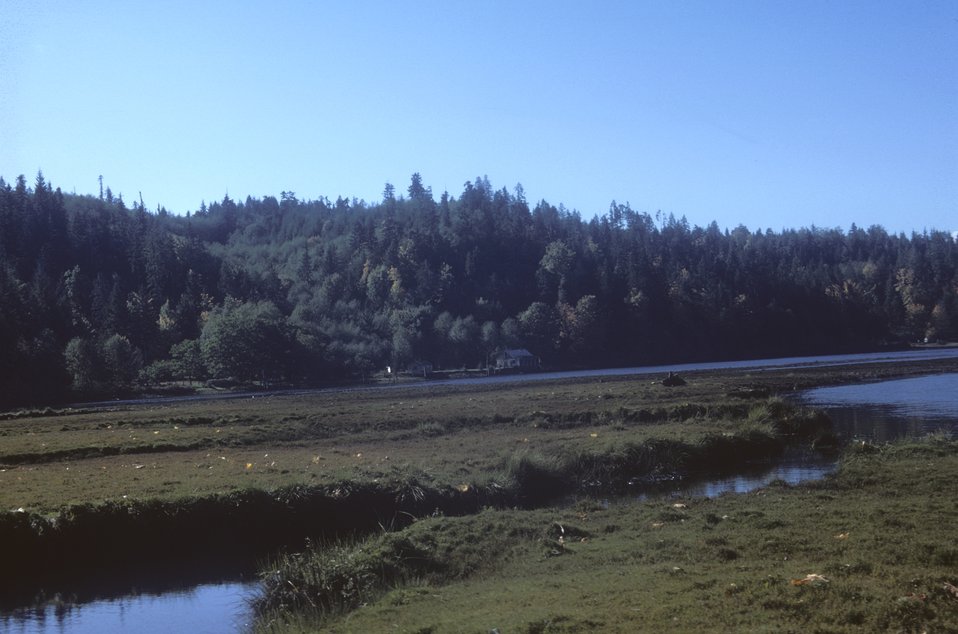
Tidal inlet in fall